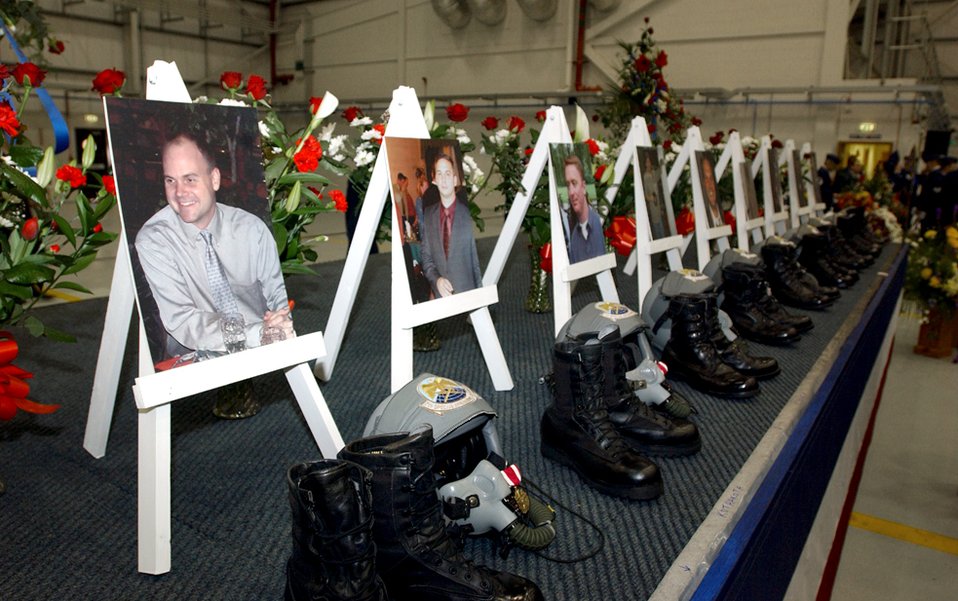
Remembering the fallen

ROYAL AIR FORCE MILDENHALL, England -- A memorial service was held here April 6 for the nine Airmen killed in an MC-130H Combat Talon II crash in Albania on March 31. Eight of the Airmen were assigned to the 7th Special Operations Squadron, and one was assigned to Detachment 2 of the 25th Intelligence Operations Squadron.